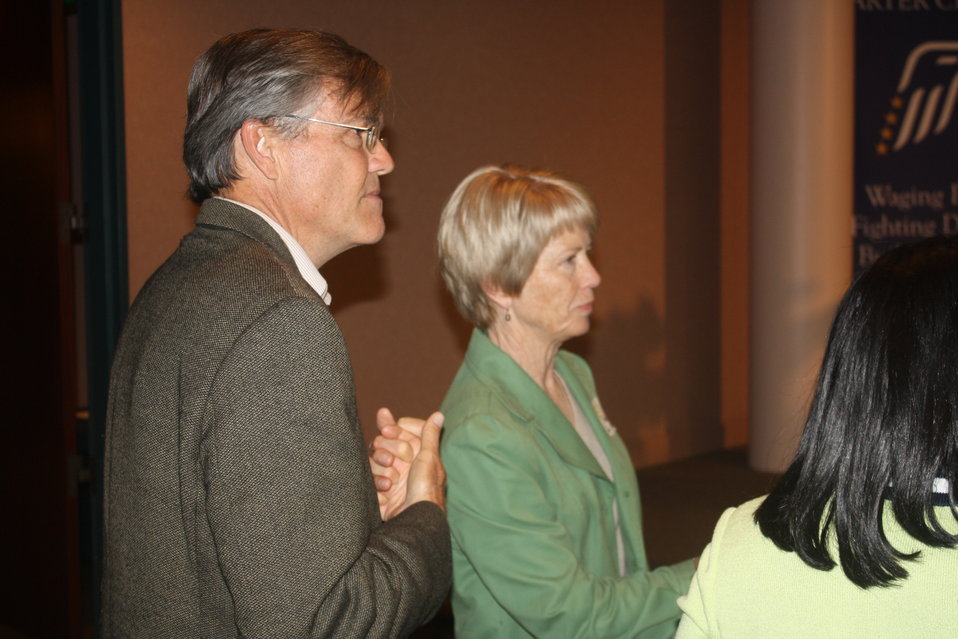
Faith-Based and Neighborhood Partnership launch at Atlanta's Carter Center